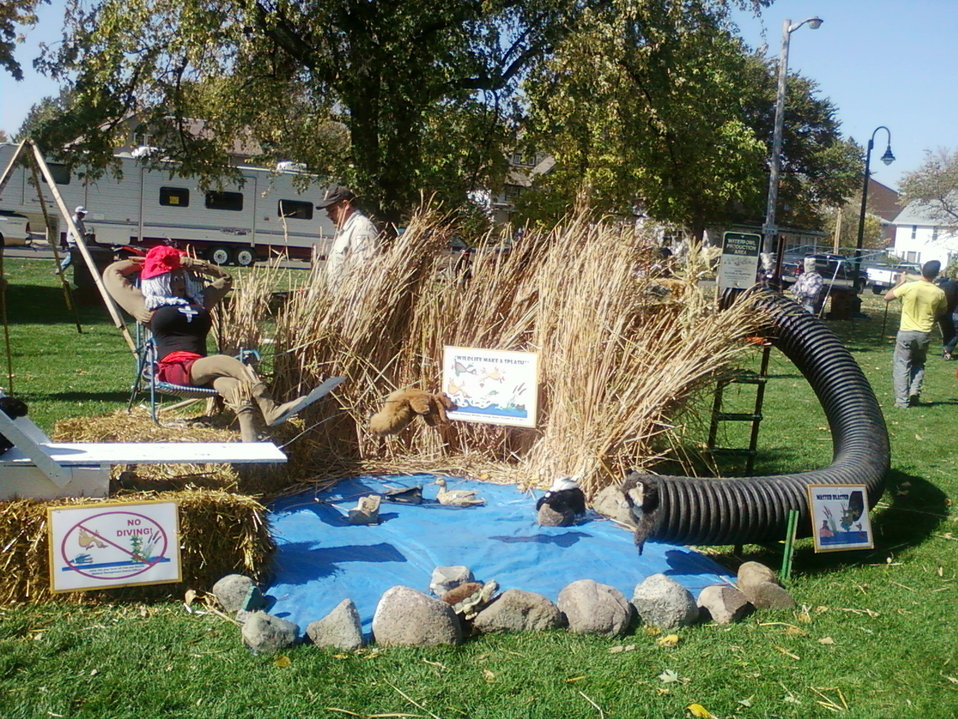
2011 Scarecrow Contest Huron, SD